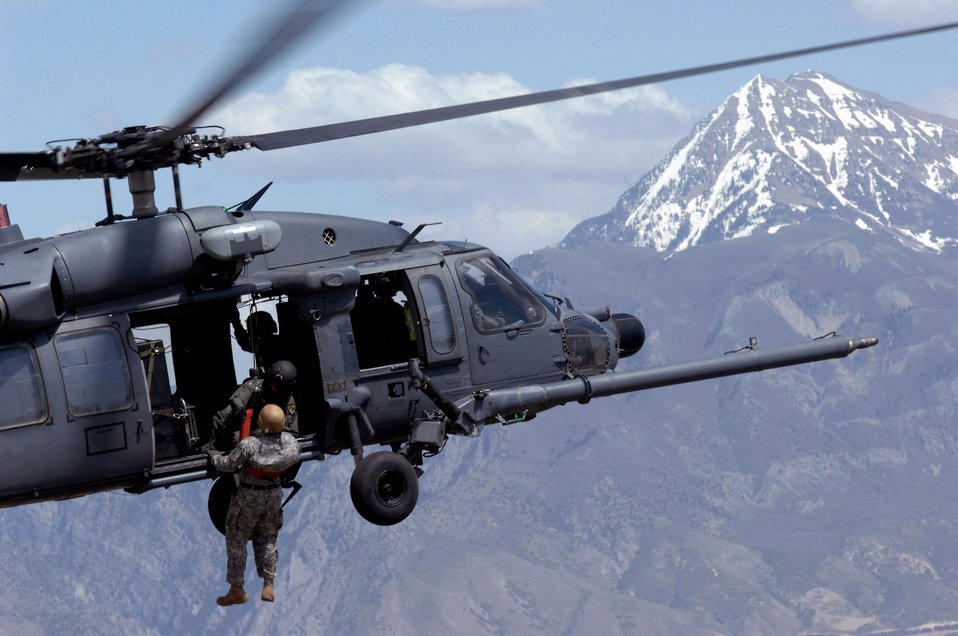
Search and rescue training

A Utah Army National Guard Soldier is lifted on board an Air Force HH-60 Pave Hawk over the Utah Test and Training Range May 3 during a combat search and rescue integration exercise in Sandy, Utah. The 34th Weapons Squadron from Nellis Air Force Base, Nev., led the search and recovery training. The objective of the exercise was to expand expertise and integration with Utah's 211th Aviation Group AH-64 Apache Joint Rotary Wing, 4th Fighter Squadron F-16 Fighting Falcon Striker assets, special operations forces and conduct extensive joint CSAR operations against surface-to-air threats.